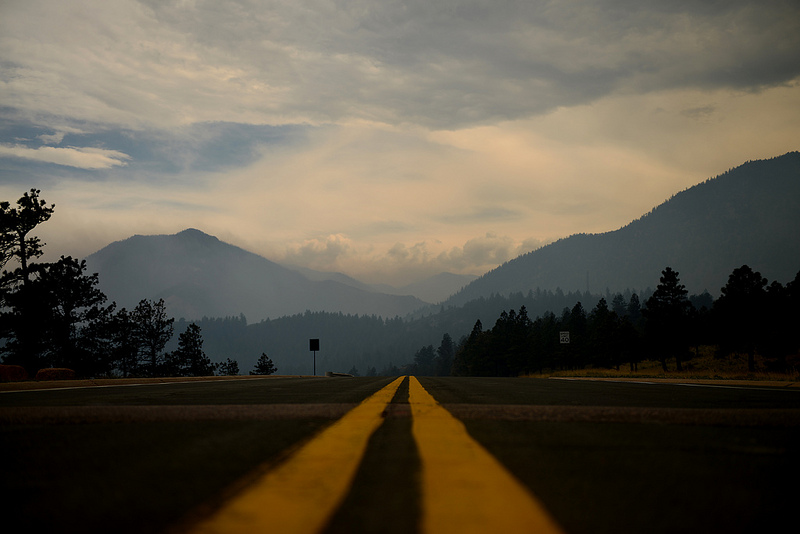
Academy firefighters battle Waldo Canyon fire

Firefighters battle several fires in Waldo Canyon in Colorado Springs, Colo., on June 27, 2012. The fires, which have burned more than 15,000 acres, began spreading to the southwestern corner of the Academy causing base officials to evacuate residents. Officials estimated the fire had spread to about 10 acres of Academy land.